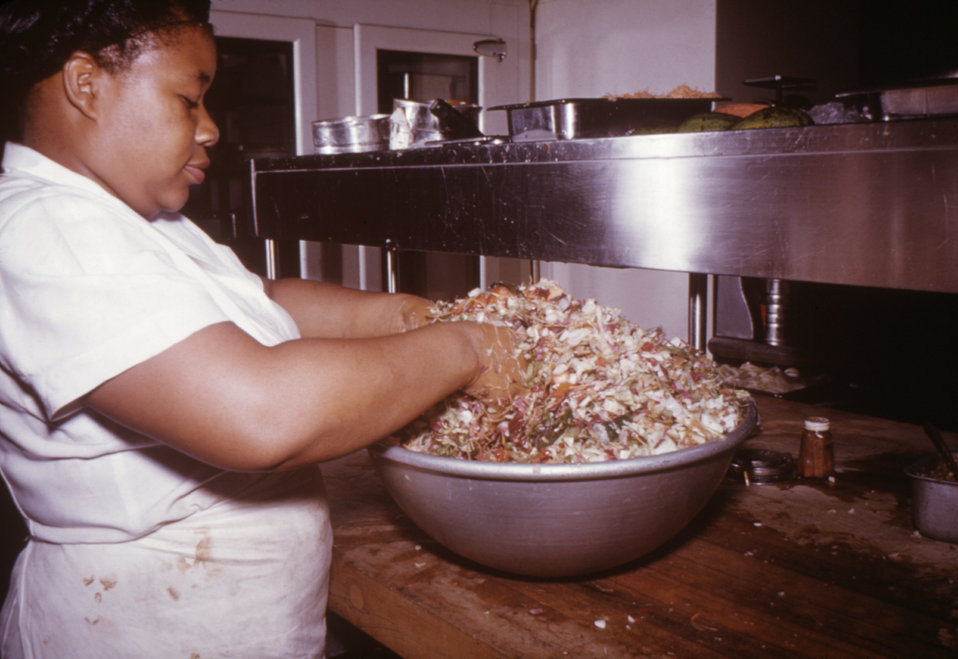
This photograph of a migrant labor camp chef shows the importance of washing hands before directly handling food.